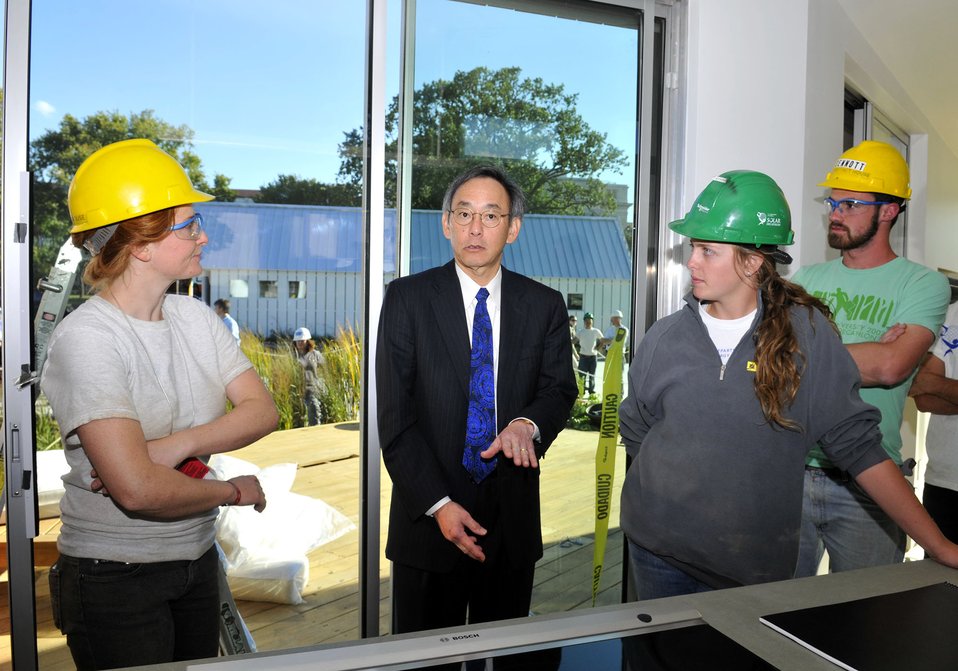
Solar Decathlon 2009 on the National Mall, with Sec. Chu

Solar Decathlon 09